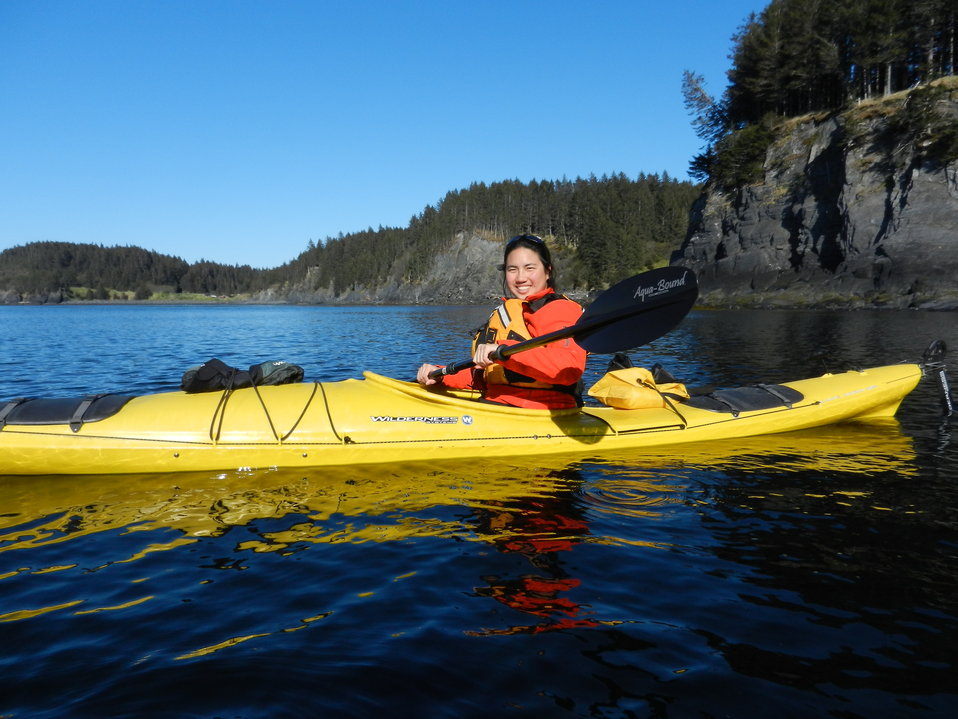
2012-Kodiak-Work

Alaska Career Discovery Program in Partnership with the Student Conservation Association